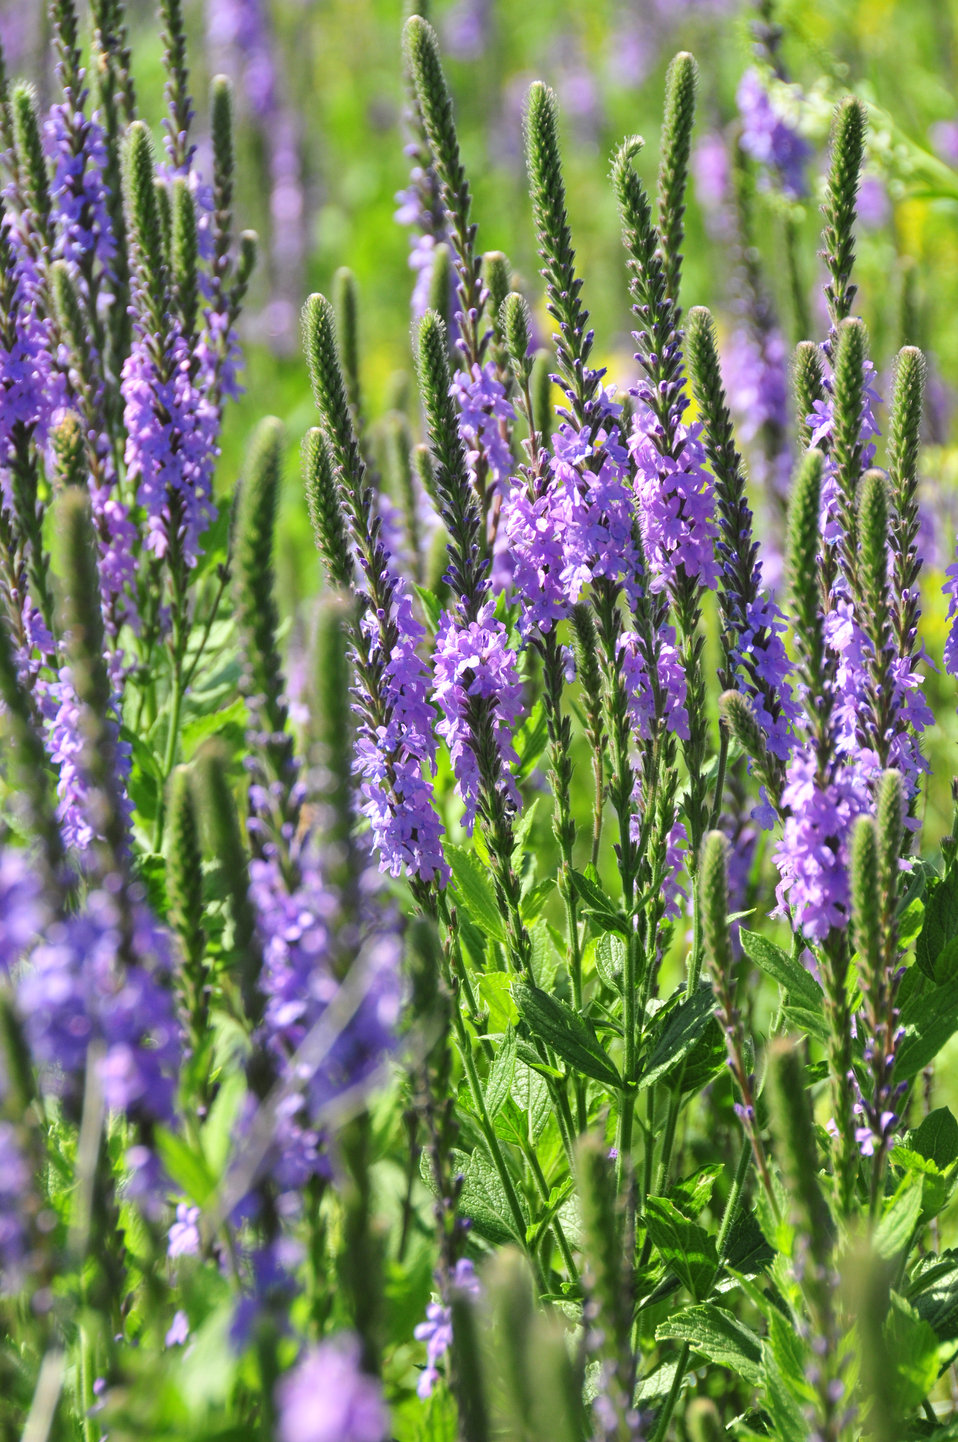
Hoary Vervain (Verbena stricta) on Mixed Grass Prairie of Lacreek NWR

Hoary vervain (verbena stricta) is a native wildflower that tolerates disturbance on prairies. It is not preferred forage for cattle and can increase under heavy season long grazing. It provides an abundance of flowers that are used by many species of insects. It establishes easily and is often included in seed mixes for prairie restoration.